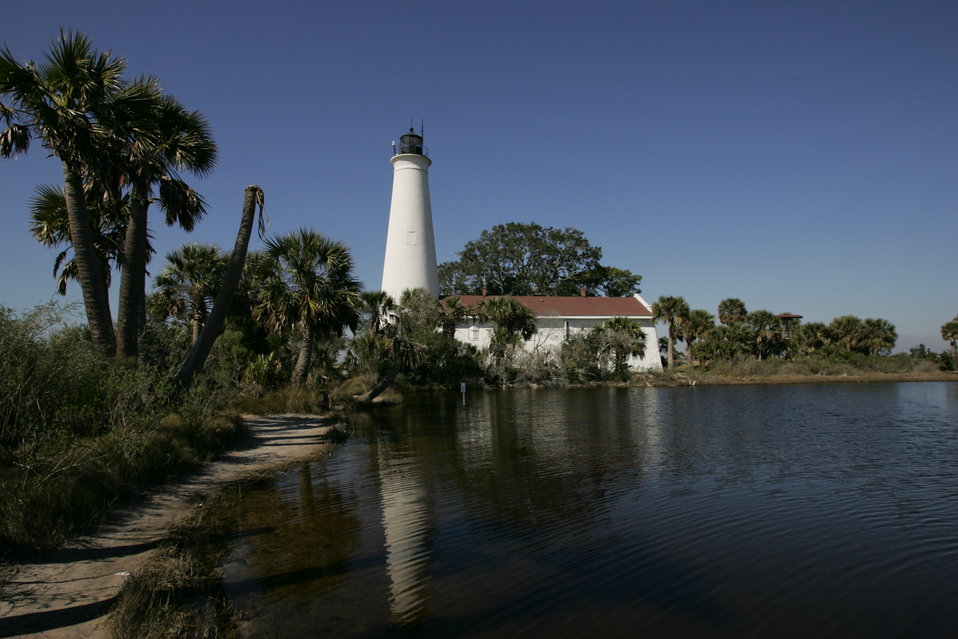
FL- St. Marks National Wildlife Refuge

refuge lighthouse.